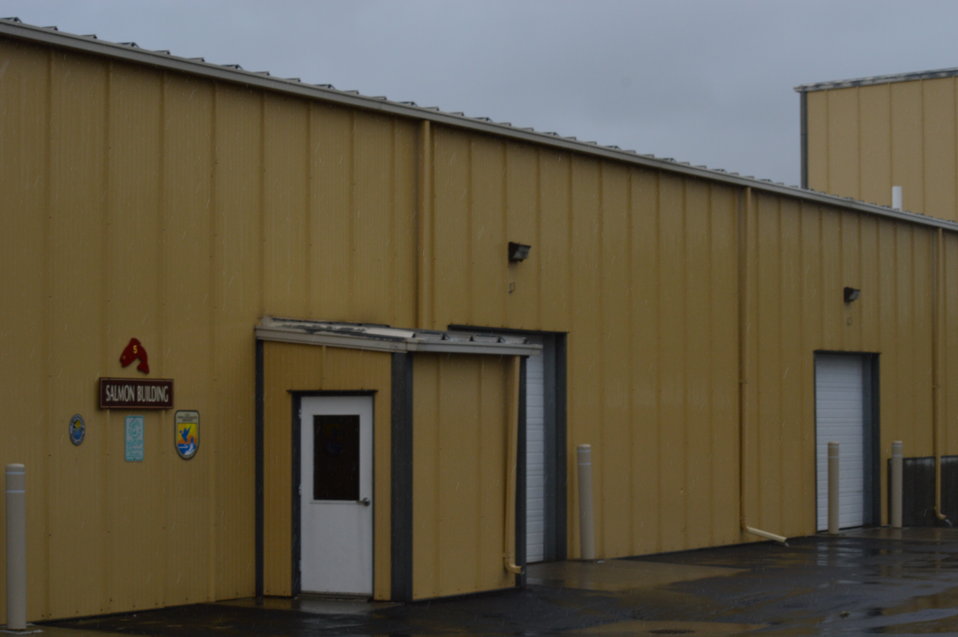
Salmon Building

Garrison Dam National Fish Hatchery in North Dakota.